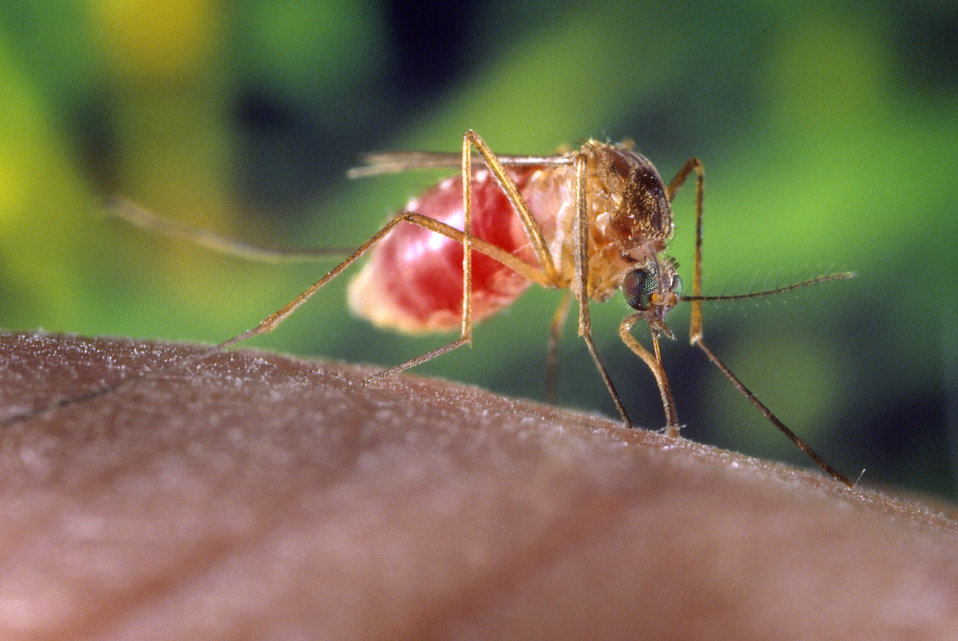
A Culex quinquefasciatus mosquito on a human finger.